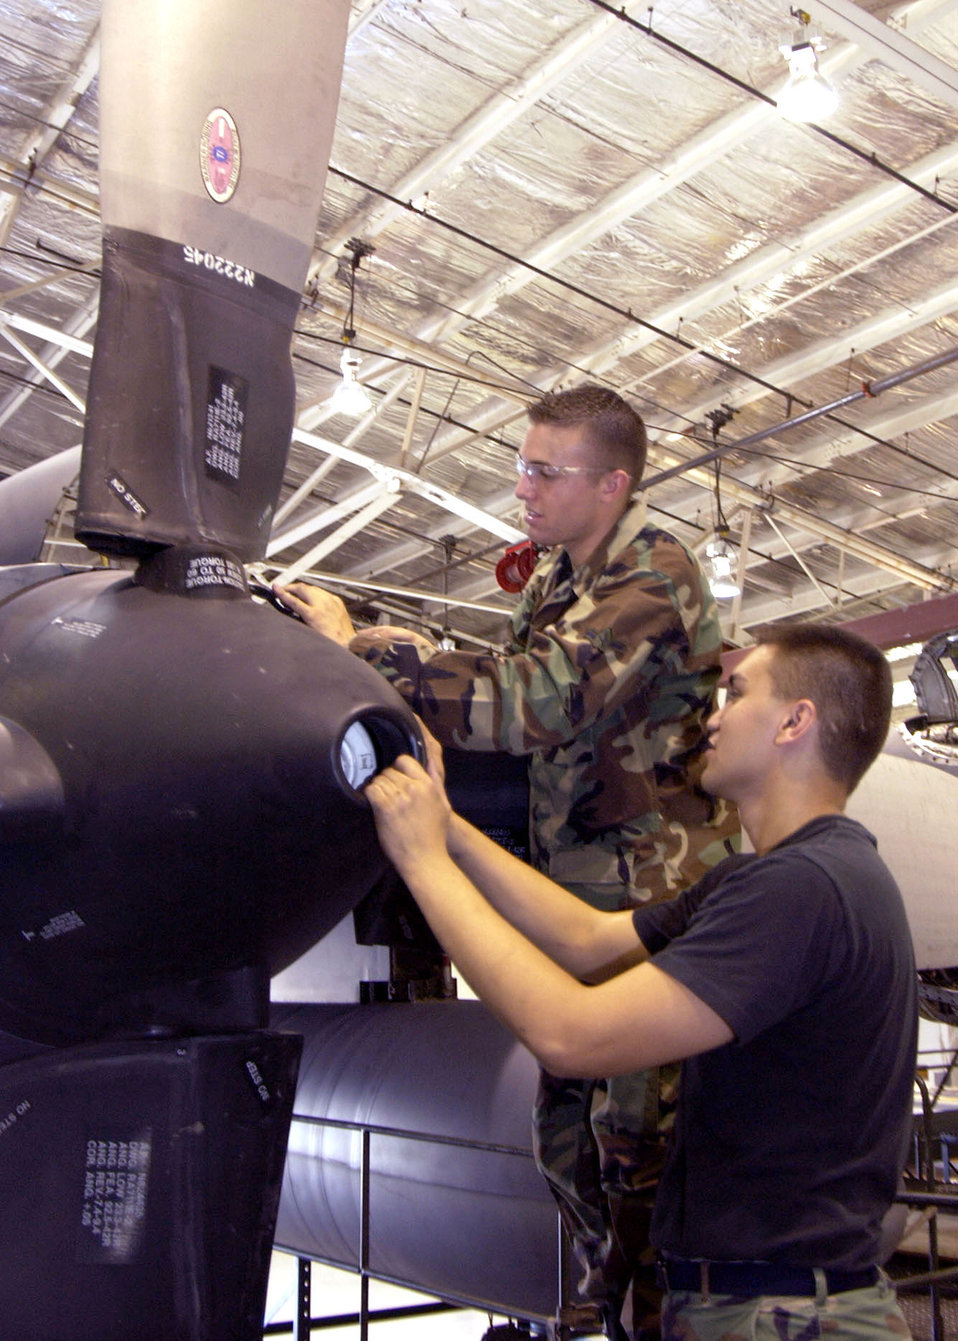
EC-130 tune-up

Airman Nick Sinwell (top) and Staff Sgt. Sam Gaare install safety wire on the dome of the an EC-130 Compass Call propeller at Davis-Monthan Air Force Base, Ariz., on July 18. Both Airmen are assigned to the 355th Equipment Maintenance Squadron.